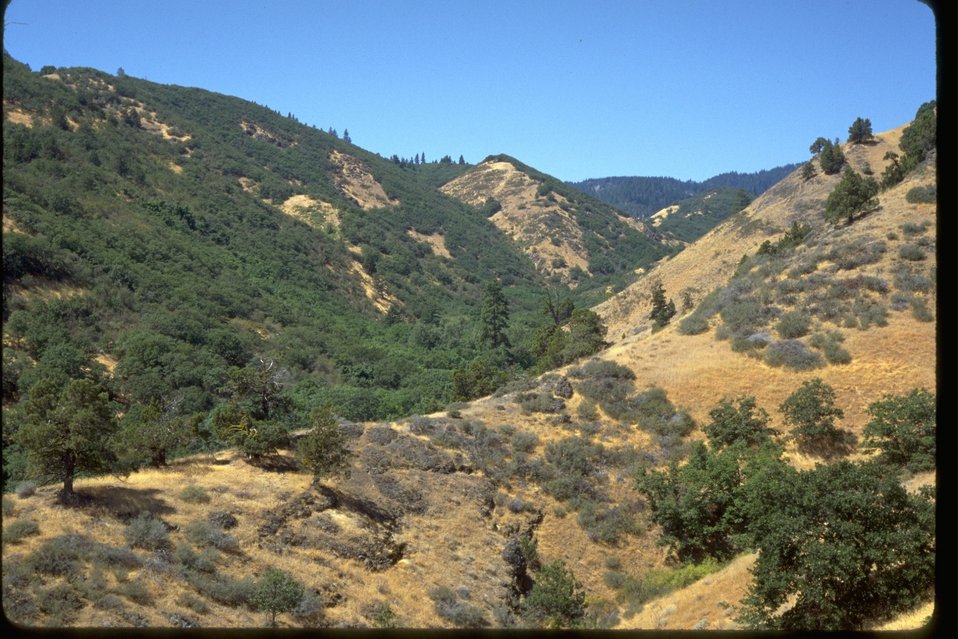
Scotch Creek RNA, view north up the drainage.